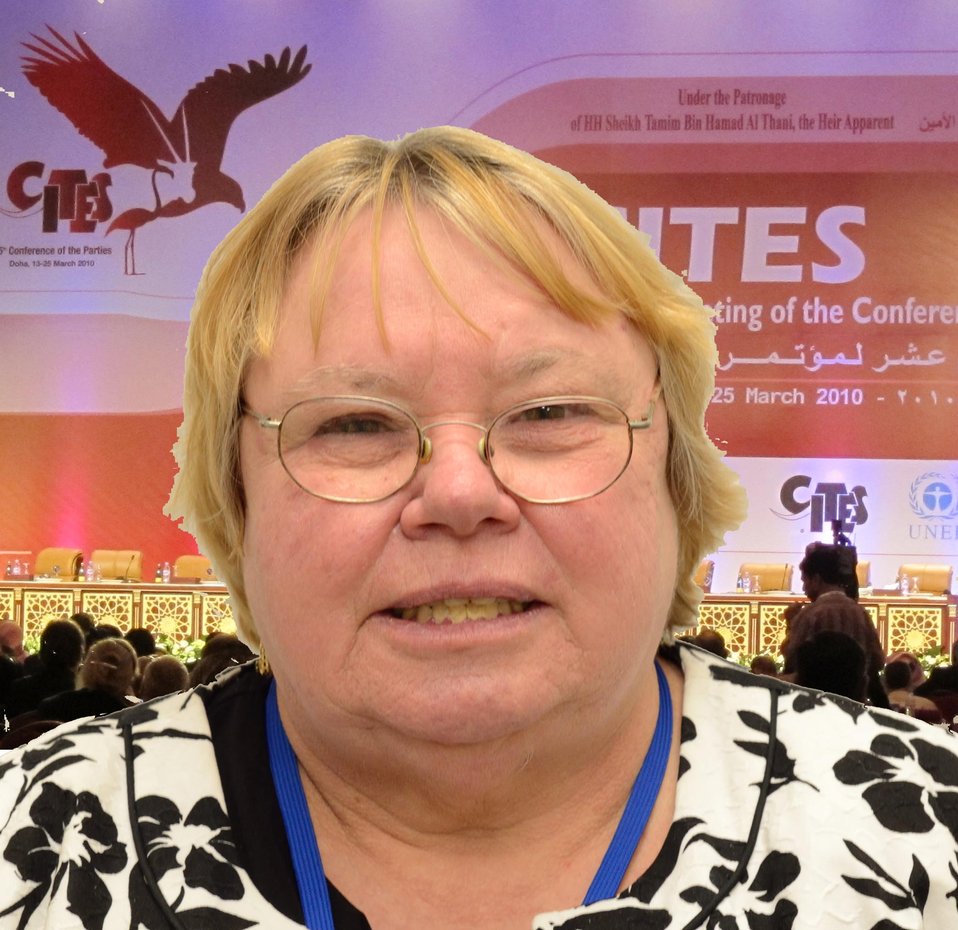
Rosemarie Gnam

Science Leadership Award, Honorable Mention – 2013

Rosemarie Gnam at the 15th CITES Conference of the Parties (Qatar, 2010)